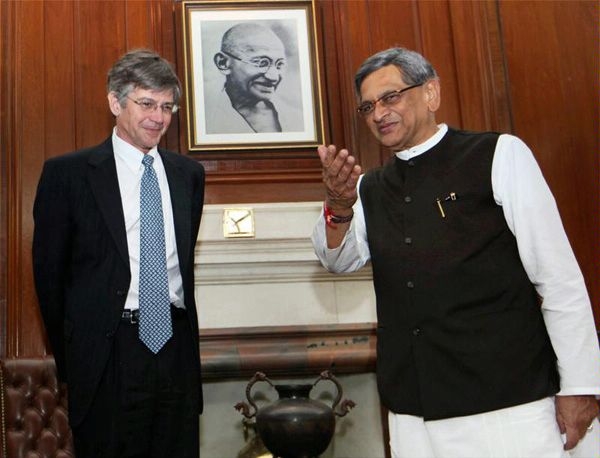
Deputy Secretary of State James Steinberg With Indian Foreign Minister S.M. Krishna

Deputy Secretary of State James Steinberg meets with Indian Foreign Minister S.M. Krishna in New Delhi, India, April 21, 2010.